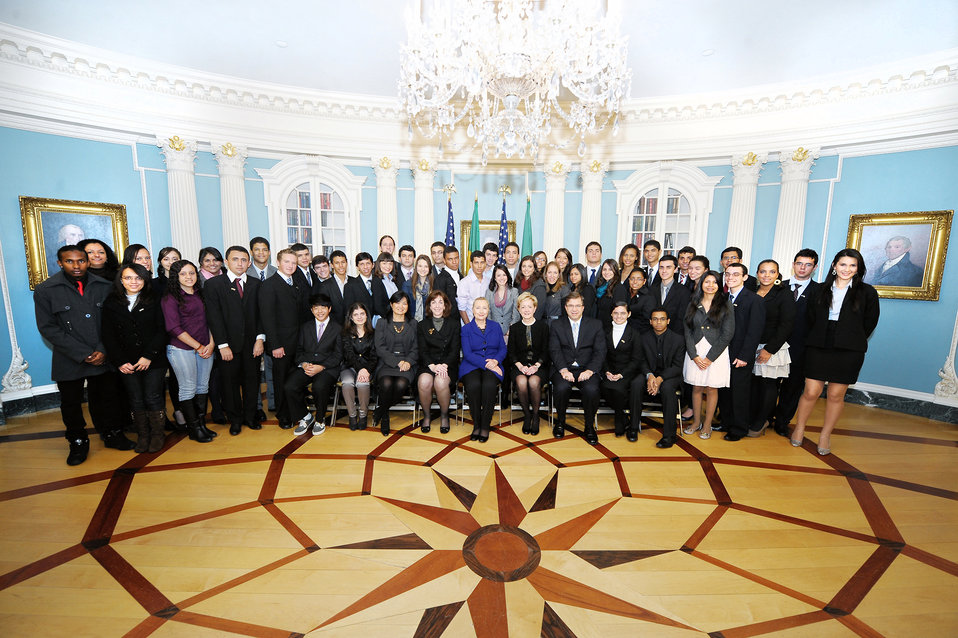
Secretary Clinton Meets With Brazilian Youth

U.S. Secretary of State Hillary Rodham Clinton meets with Brazilian youth participating in the Youth Ambassadors program at the U.S. Department of State in Washington, D.C., on January 25, 2012. The Secretary celebrated the 10th Anniversary of the Youth Ambassadors Program and highlighted the importance of engaging youth worldwide.